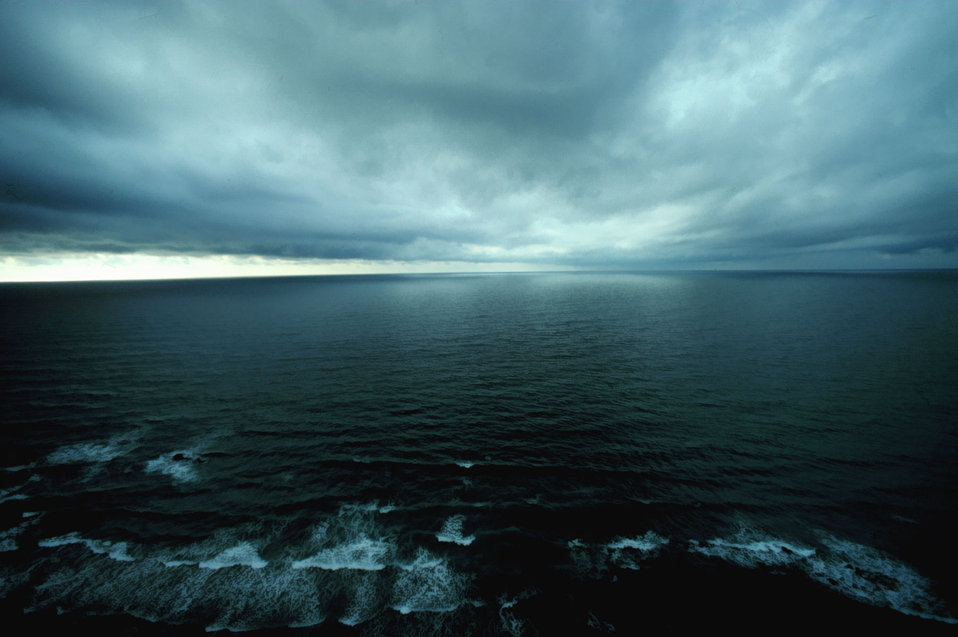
Late afternoon sun reflecting on the Pacific